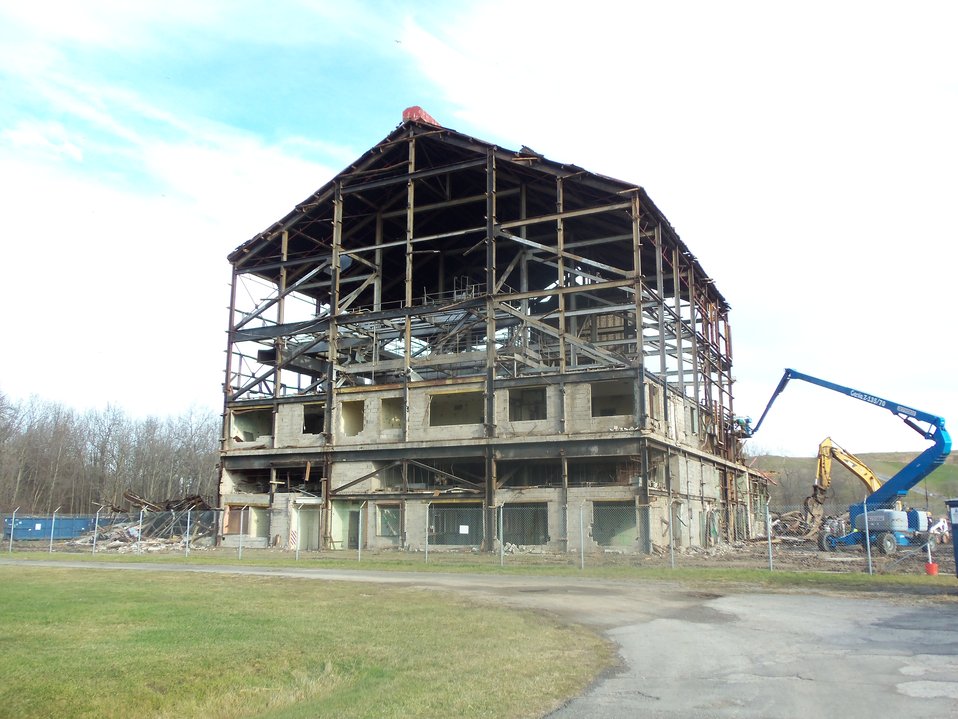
Building 401 shell deconstruction.

Activities from the Niagara Falls Storage Site, which is associated with the former Lake Ontario Ordnance Works. Formerly Utilized Sites Remedial Action Program (FUSRAP), a program initiated in 1974 to identify, investigate and clean up or control sites that were part of the Nation's early atomic energy and weapons program. Activities at the sites that are eligible for FUSRAP were conducted by Manhattan Engineer District (MED) or the Atomic Energy Commission (AEC), both predecessors of the Department of Energy (DOE). The U.S. Army Corps of Engineers was assigned management of FUSRAP by Congress in 1997.